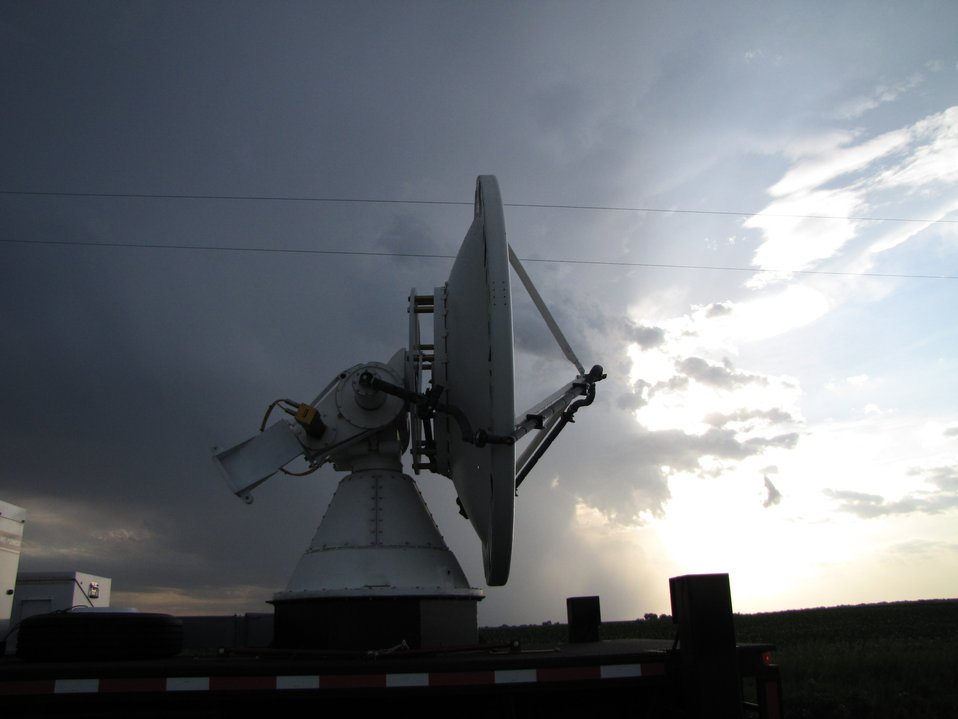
NOAA/NSSL X-Pol Mobile radar scanning before the storm.